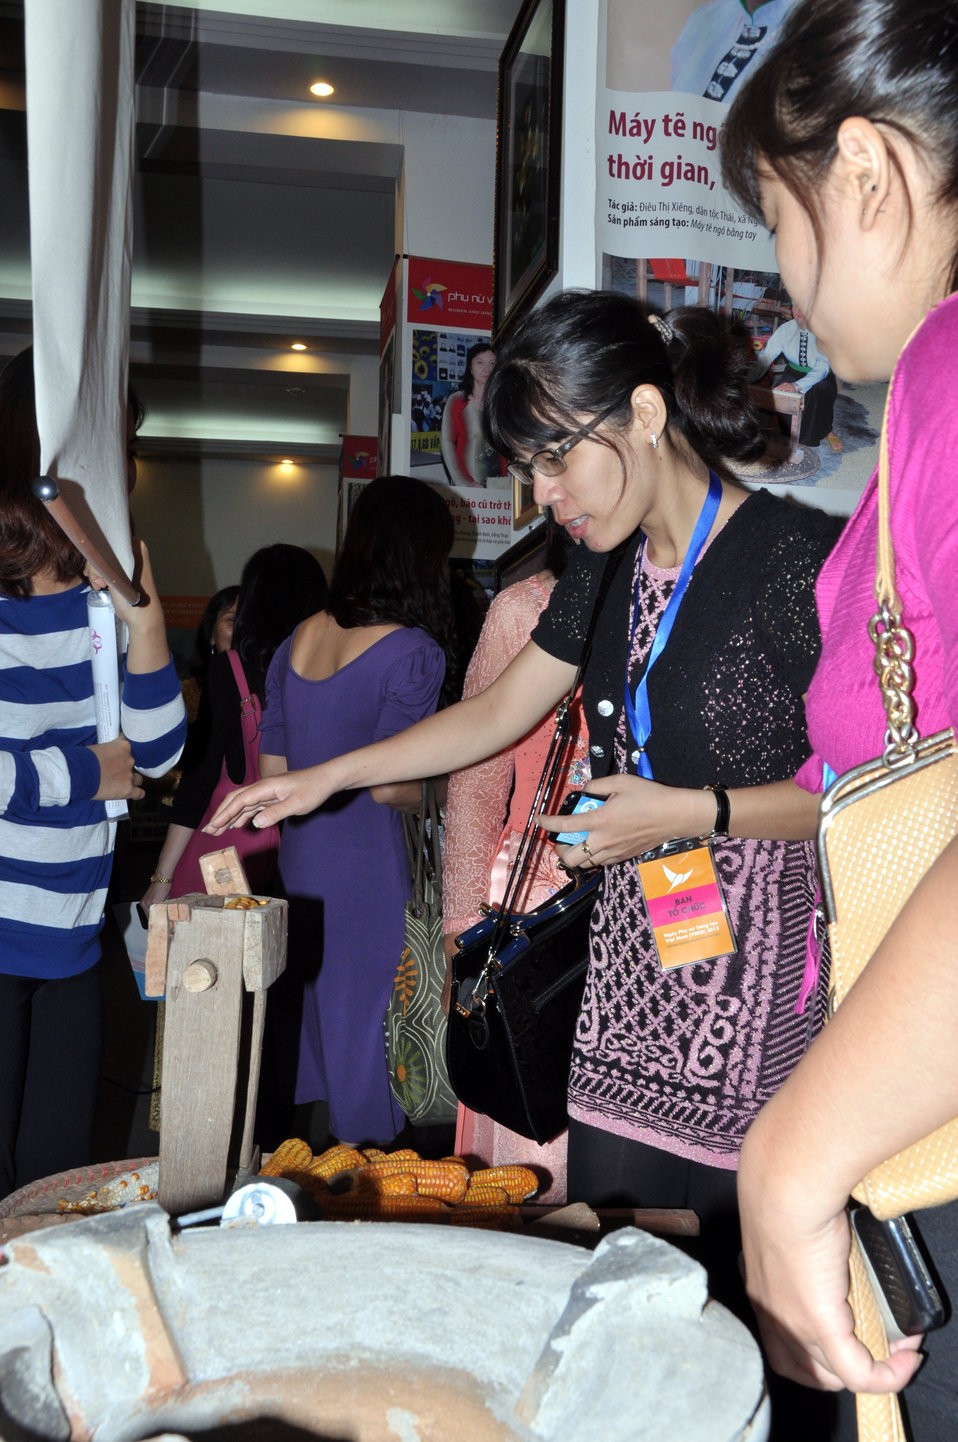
Vietnam Women Innovation Day 2013

Hanoi, October 1, 2013.